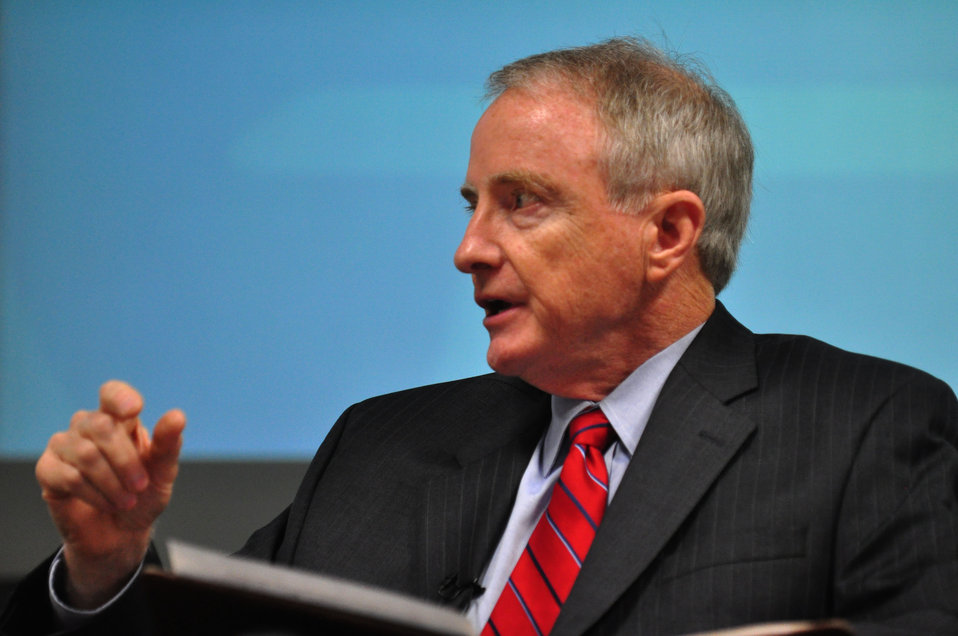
Tennessee Valley Corridor Summit Oak Ridge

13-062 DOE photo Lynn Freeny 5-29-2013 Oak Ridge Tennessee